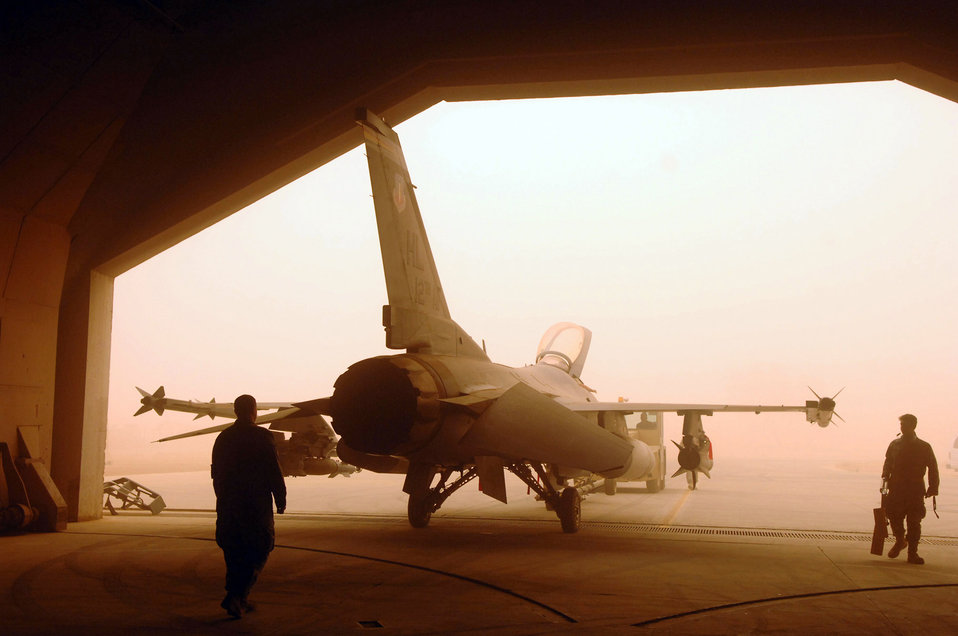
It's a 'shamal world' for combat weather Airmen

Crew chiefs assigned to the 332nd Expeditionary Aircraft Maintenance Squadron spot an F-16 Fighting Falcon while being pushed into a hardened aircraft shelter during a major dust storm May 9 at Joint Base Balad, Iraq. Protecting flightline assets from dust damage or destruction is important to maintaining the air mission.